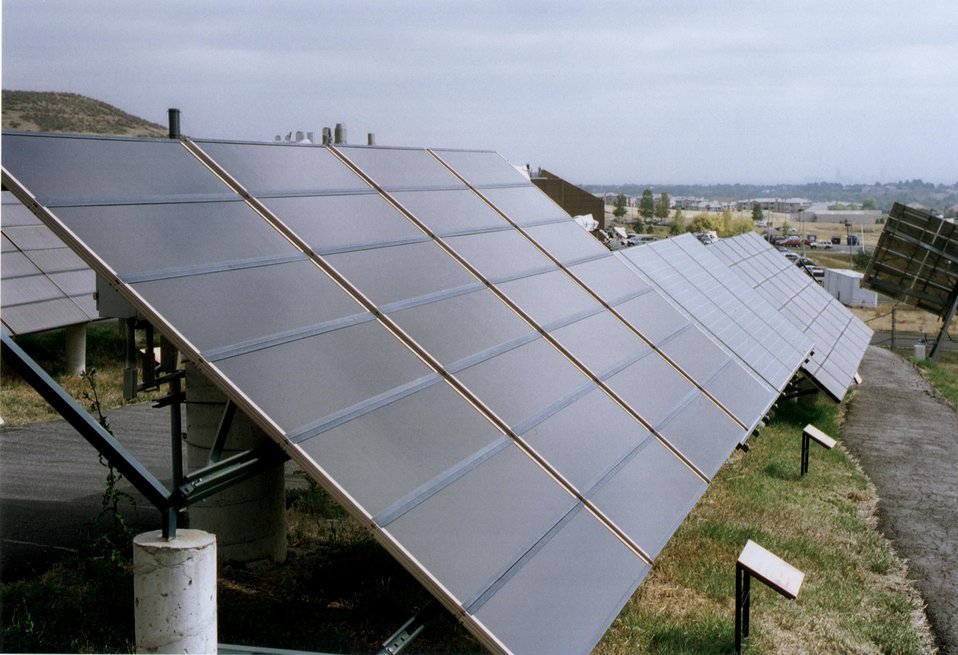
AN ARRAY OF PHOTOVOLTAIC PANELS AT NATIONAL RENEWABLE ENERGY LABORATORY.

ENGINEERS AT NREL TEST PROTOTYPE PHOTOVOLTAIC MODULES PRODUCED BY VARIOUS COMPANIES PARTICIPATING IN A TESTING AND MANUFACTURING PROJECT. SCIENTISTS INVESTIGATE WAYS TO IMPROVE DESIGN AND EFFICIENCY OF PHOTOVOLTAIC SYSTEMS.